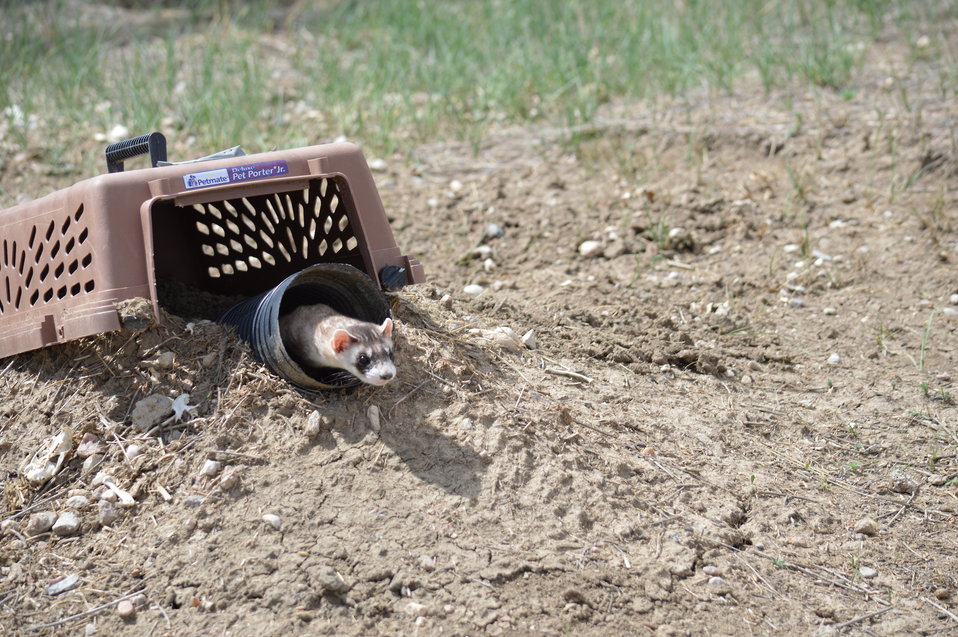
Interns visit the NBFFCC

In the summer of 2012, USFWS Region 6 interns visited the National Black-footed Ferret Conservation Center (NBFFCC) in Colorado to learn how the program reintroduces the endangered Black-footed ferret back into its native habitat.